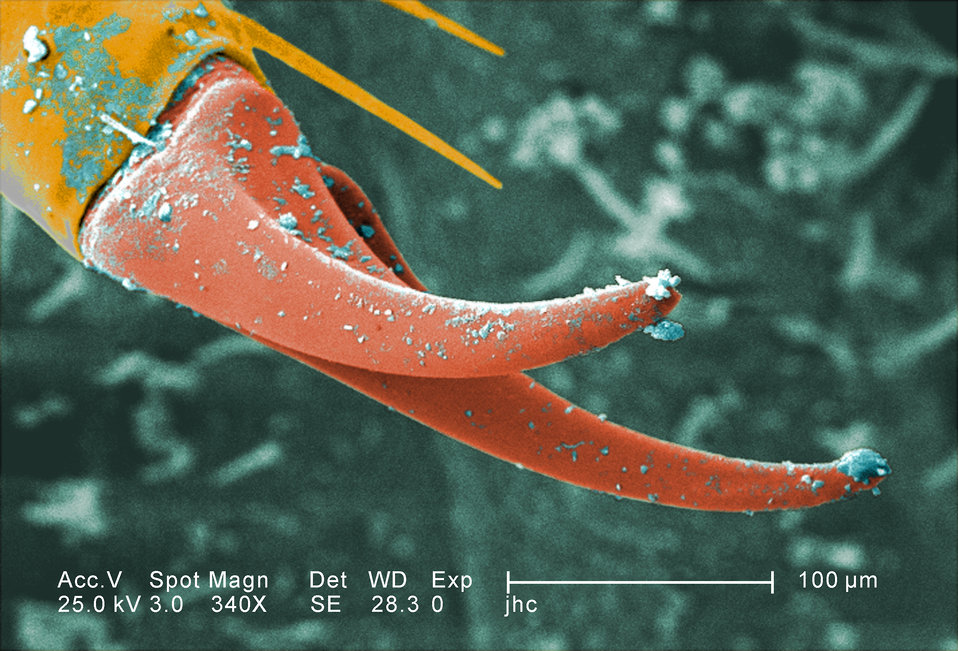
Under a moderate magnification of 340X, this digitally-colorized scanning electron micrograph (SEM) depicted the exoskeletal surface of a larval staged antlion, sometimes referred to as a 'doodlebug', because of the trails it leaves in the soft sand as it hunts for prey. This arthropod, i.e., jointed legs, undergoes dramatic morphologic changes when it metamorphoses into a beautiful flying antlion lacewing. In this particular view, the distal end of one of the larva's extremities is highlighted, revealing the claw it uses to grasp objects it encounters in its environment, including sand.